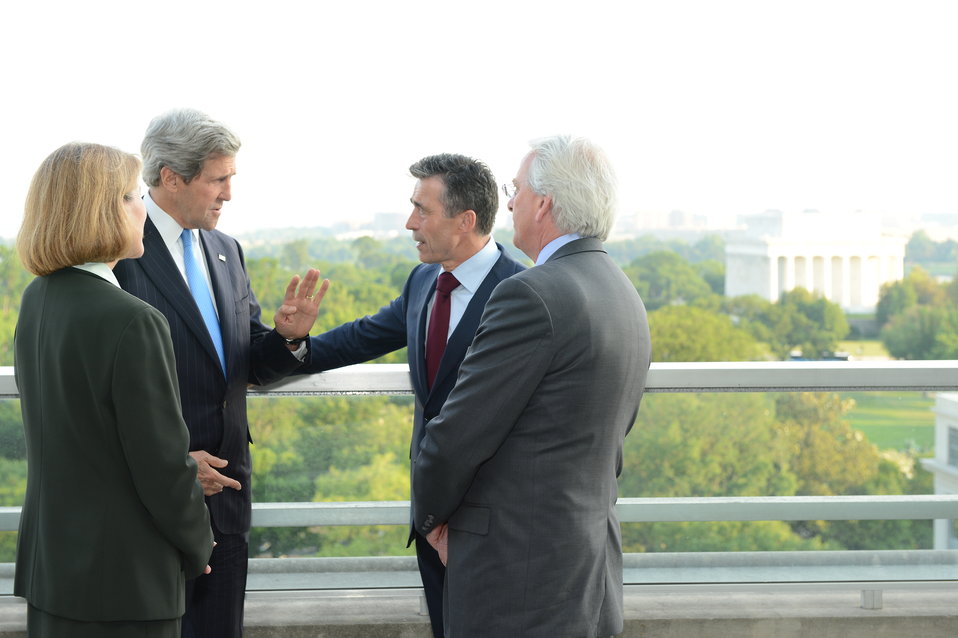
Secretary Kerry Speaks With NATO Secretary General Rasmussen

U.S. Secretary of State John Kerry speaks with NATO Secretary General Anders Fogh Rasmussen, second from right, on the balcony of U.S. Department of State overlooking the Lincoln Memorial at the in Washington, D.C., on May 30, 2013.